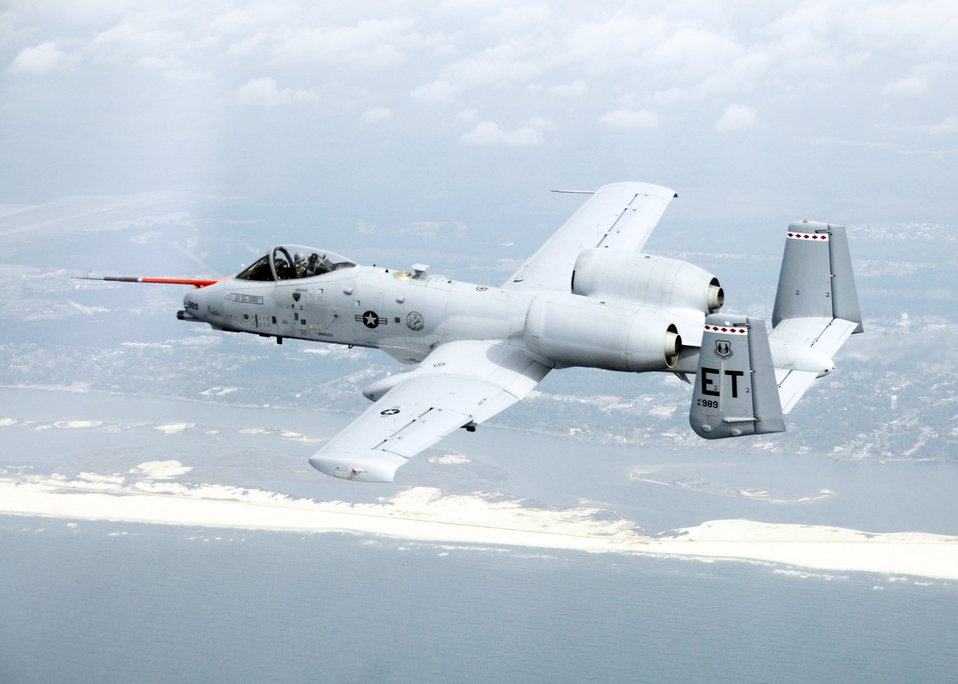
Green flight

An A-10C Thunderbolt II from Eglin Air Force Base, Fla., flies along the coast of Florida March 25, 2010, during the first flight of an aircraft powered solely by a biomass-derived jet fuel blend. The A-10 was fueled with a 50/50 blend of Hydrotreated Renewable Jet and JP-8.